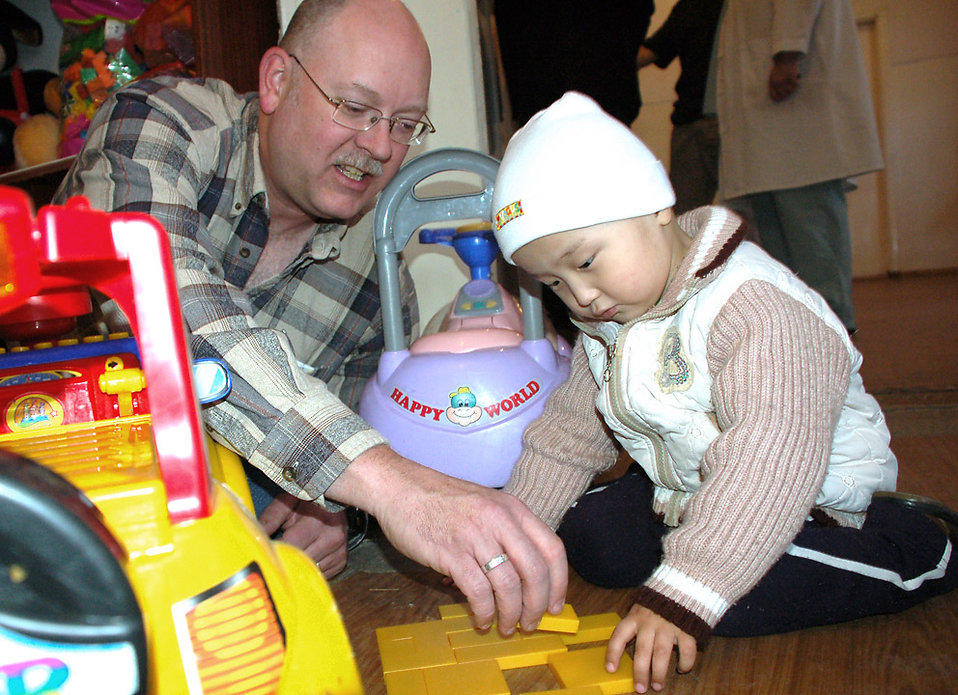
Manas Airmen tend to children's cancer center needs

Master Sgt. Royd Chambers plays blocks with a child Feb. 25 at Kyrgyzstan's sole Children's Cancer Hospital. Sergeant Chambers spent some of his off-duty time with others from Manas Air Base, Kyrgyzstan, who are members of the Manas Air Base Outreach Society, a private, nonprofit volunteer service organization that supports a number of causes in the greater Bishkek area and communities near the base. Sergeant Chambers is an Iowa Air National Guardsman assigned to the 376th Expeditionary Airlift Wing Chaplain Office. He is deployed from the 185th Air Reserve Wing in Sioux City and is originally from Sheldon, Iowa.